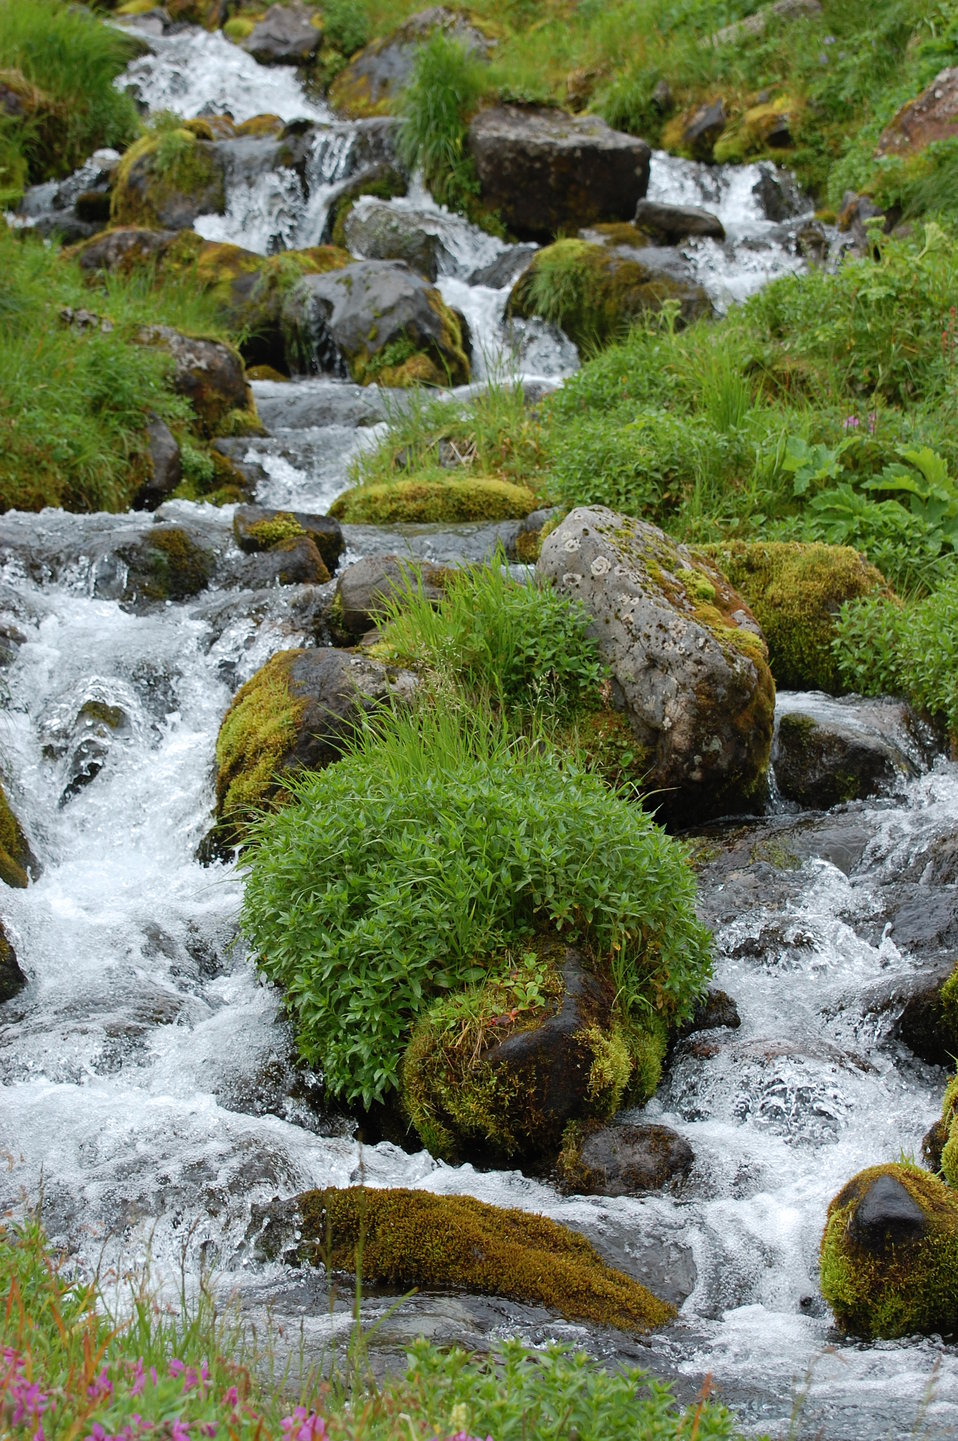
Izembek Wilderness

Wilderness near Frosty Peak, Izembek National Wildlife Refuge
Photo by Kristine Sowl,
USFWS, Public Domain